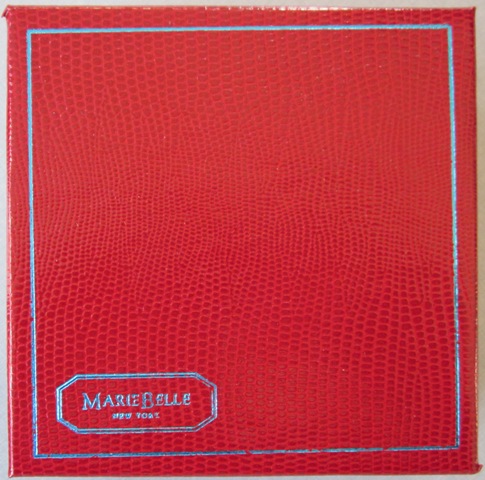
RECALLED - Chocolate Candy

December 23, 2011 - Product Recall - Maribel Sweet’s Inc. Recalls Their New York Handbag Collection Gourmet Chocolate Candies Due To Undeclared Tree Nuts And Peanuts.